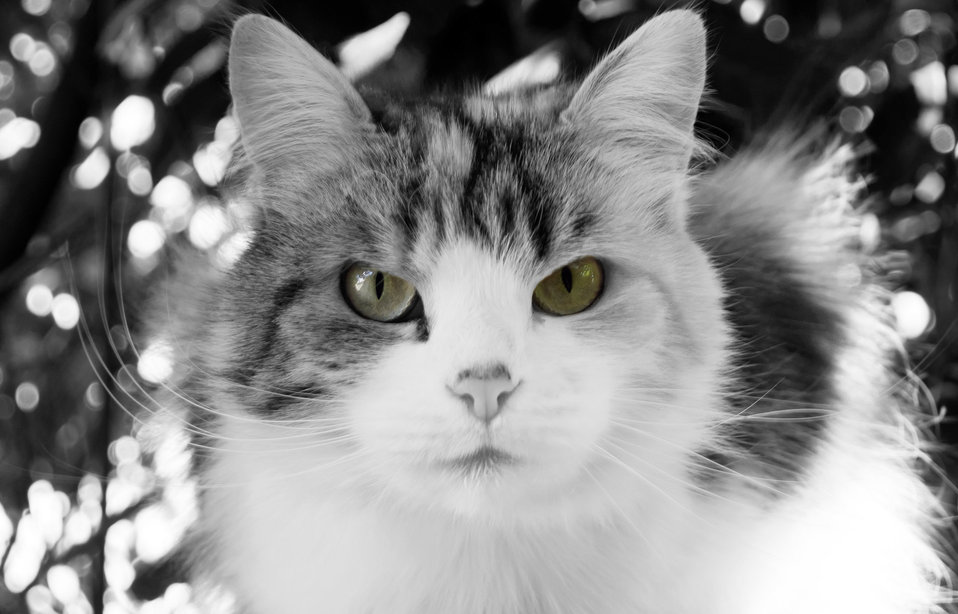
Cat - background.